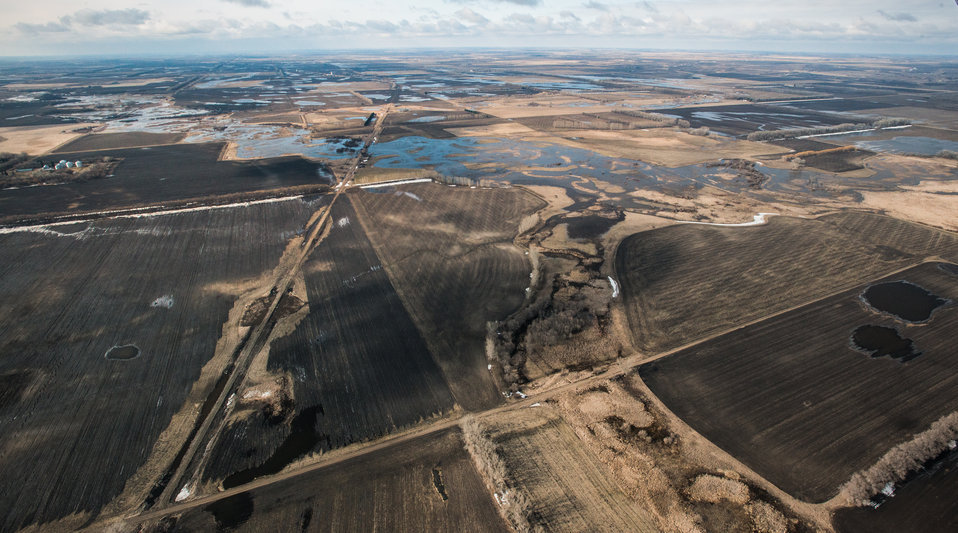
Proposed Dam site #10, on Turtle River Watershed in Grand Forks County, ND, part of the Red River basin, on Wednesday, May 1, 2013. To learn about the Red River Basin Initiative, see www.mn.nrcs.usda.gov/news/features13/RRBI.html.